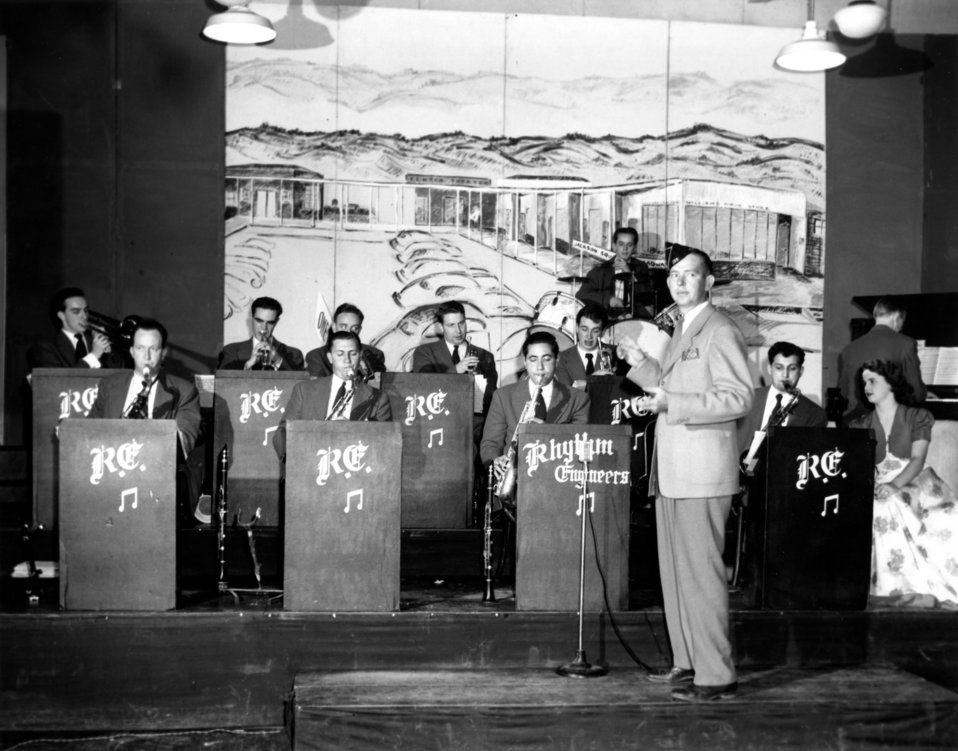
Recreation at Oak Ridge